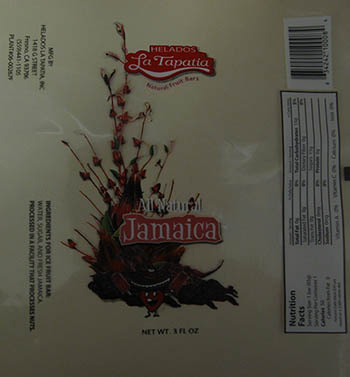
RECALLED – Ice cream products

March 19, 2014 – Product Recall – Helados La Tapatia, Inc. Recalls Products Because of Possible Health Risk.